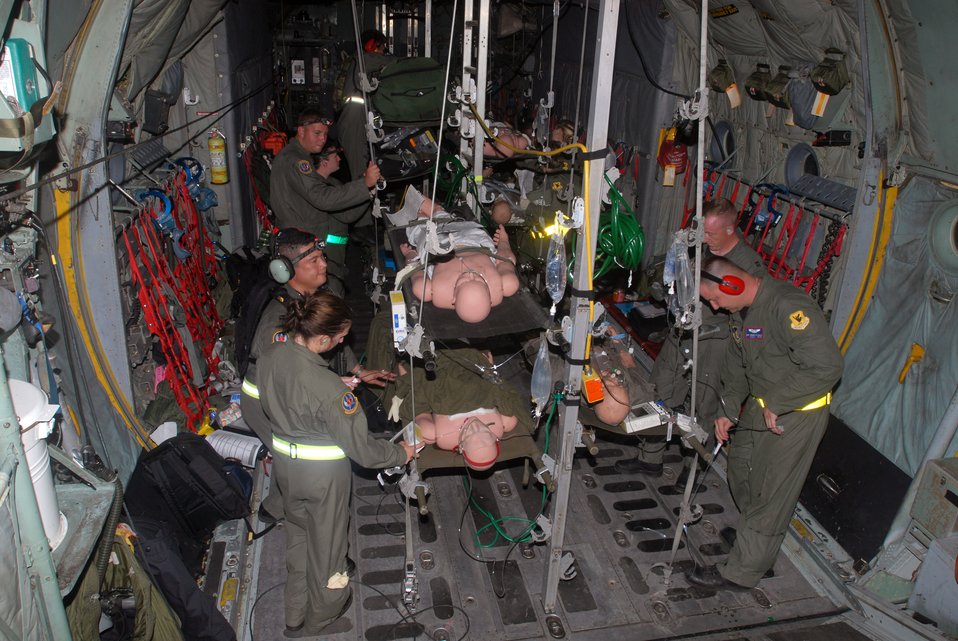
Mass casualty exercise

Airmen from the 18th Aeromedical Evacuation Squadron aboard a C-130 Hercules care for a simulated patient during a mass casualty exercise Aug. 29. The 18th Wing and the 353rd Special Operations Group conducted a mass casualty exercise to test the rescue and emergency care capabilities of Kadena Air Base. The exercise partnered seven Air Force squadrons in a land, sea and air training operation involving search and rescue, mass casualty field triage, medical patient loading and transport.